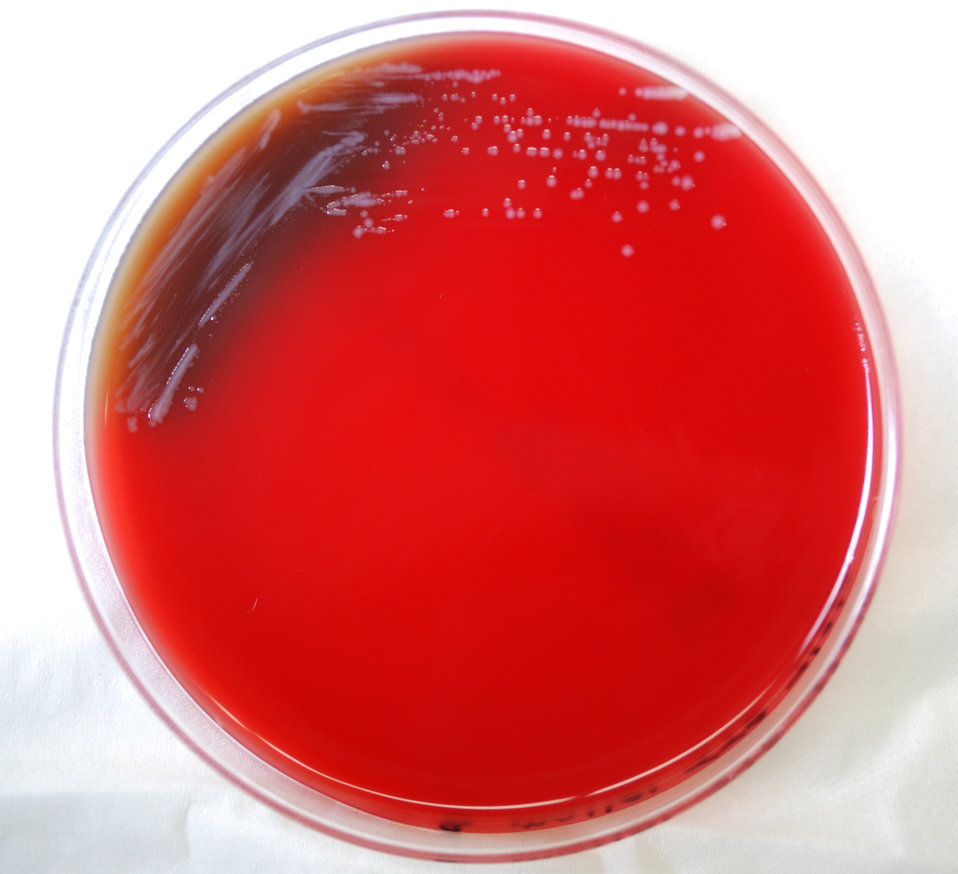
This photograph depicts the colonial morphology displayed by Gram-negative Burkholderia mallei bacteria, which was grown on a medium of sheep's blood agar (SBA), for a 48 hour time period, at a temperature of 37�C. See PHIL 12238 for closer view of these bacterial colonies.What is glanders?